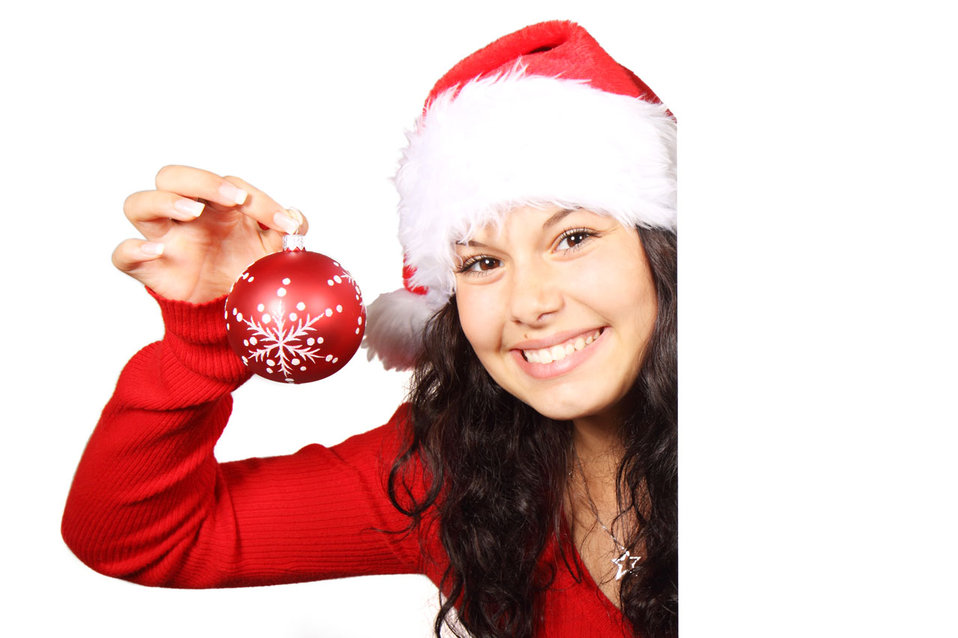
Merry christmas

Young woman as santa with red christmas bauble.